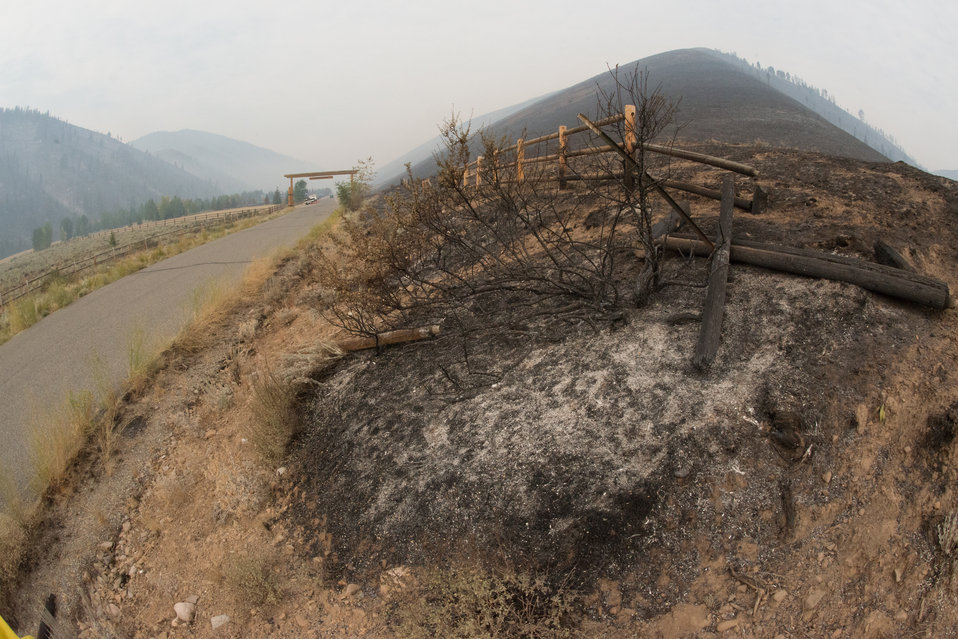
Thanks to the efforts of Wildland Firefighters, support crews and other first responders, homes and residential communities were (with few exception) saved from major damage, from the Beaver Creek Fire, near Hailey, ID, in the interface of U.S. Department of Agriculture (USDA) Forest Service (FS) and Sawtooth National Forest and Bureau of Land Management (BLM) lands, on Wednesday, Aug 21, 2013. In this community, major sections of hillside were charred, some suffered burnt trees, grass lands and fences.